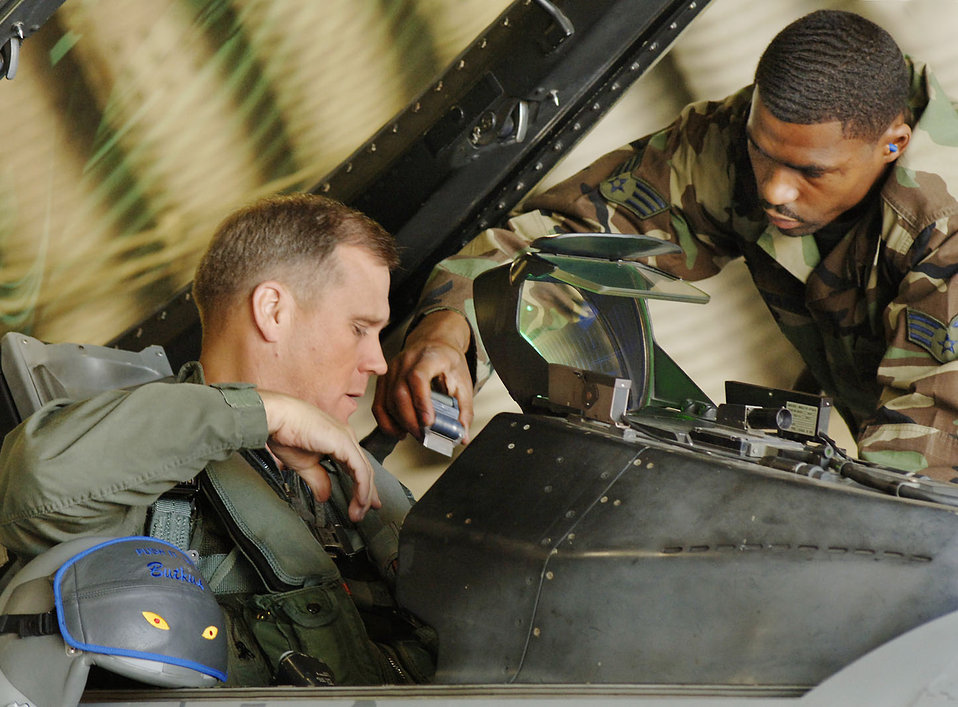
Kunsan Air Base maintains readiness

After a preflight check, Senior Airman Ian Kirkwood helps his commander, Col. Jeffrey Lofgren, strap into his F-16 Fighting Falcon at Kunsan Air Base, South Korea.